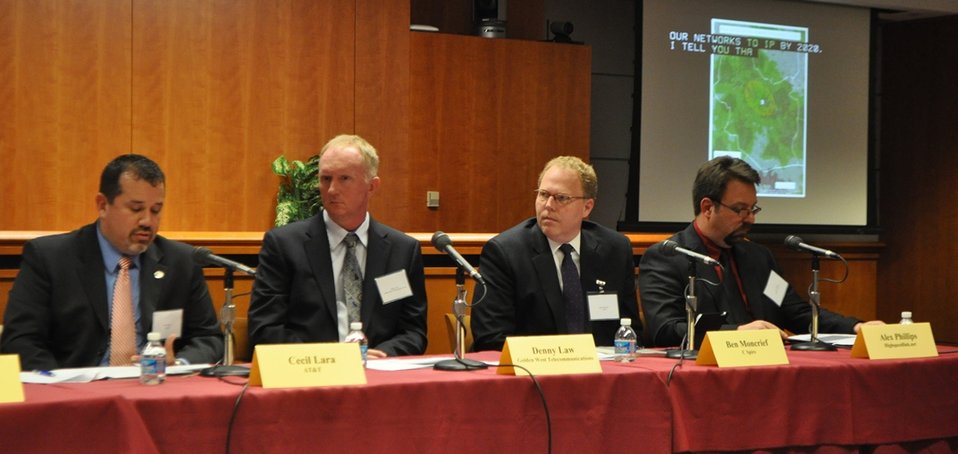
Rural Broadband Workshop: March 19, 2014

Panel 2: Rural Broadband Buildout - Effective Strategies & Lessons Learned